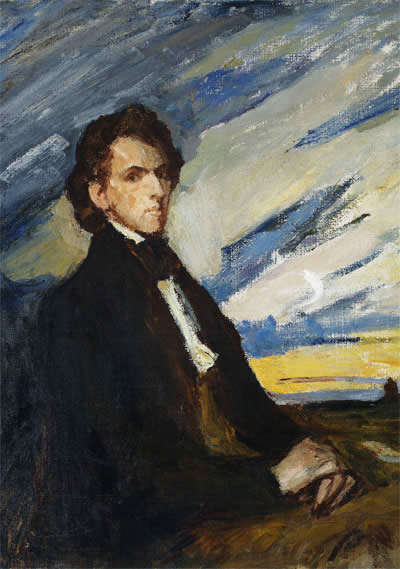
Portrait of Frederic Chopin (Scherzo H-moll)